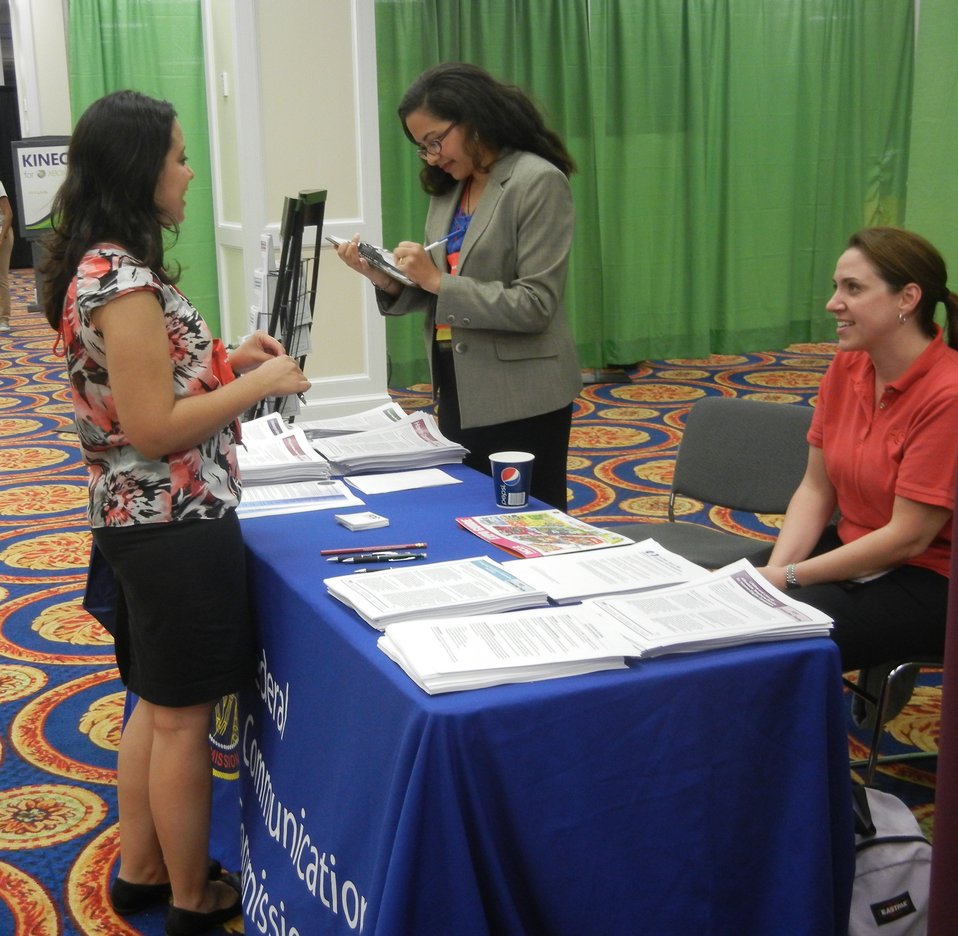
National Council La Raza

Keyla Hernandez-Ulloa speaks with attendees of the National Council La Raza Conference from July 23-26.